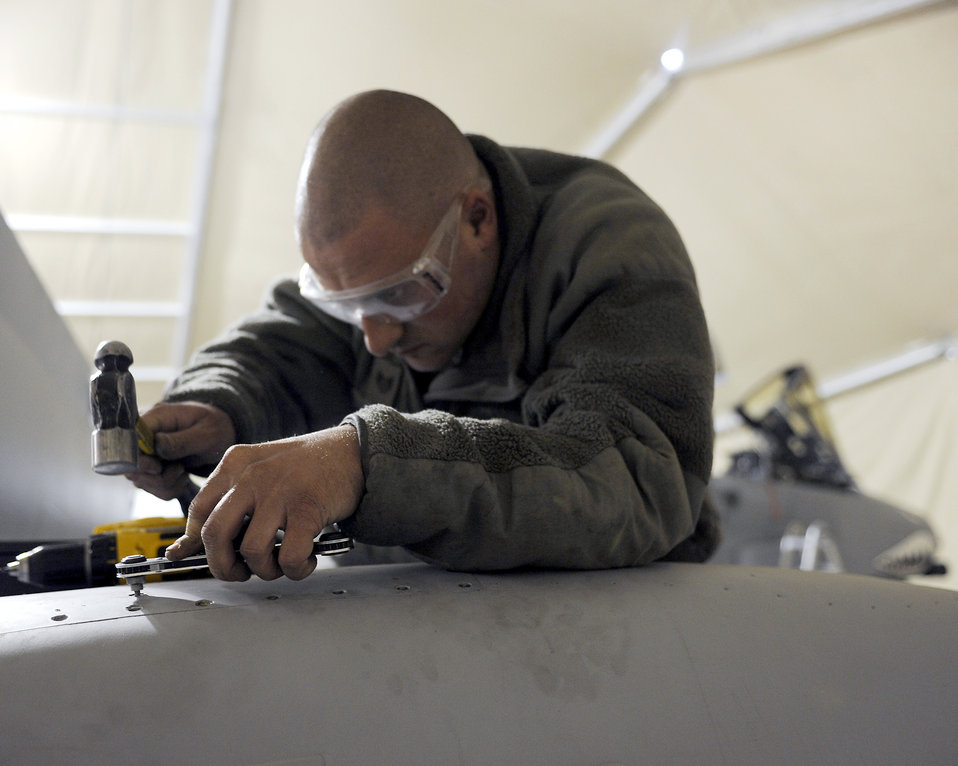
Phase inspections

Staff Sgt. Jonathan Shipp removes stuck screws from an access panel on an A-10 Thunderbolt II during a phase inspection Feb. 22, 2011, at Kandahar Airfield, Afghanistan. The 451st Air Expeditionary Wing's Expeditionary Maintenance Squadron conducts a phase inspection every 500 flight hours. Sergeant Shipp is an aircraft structural maintenance craftsman assigned to the 451st EMXS.